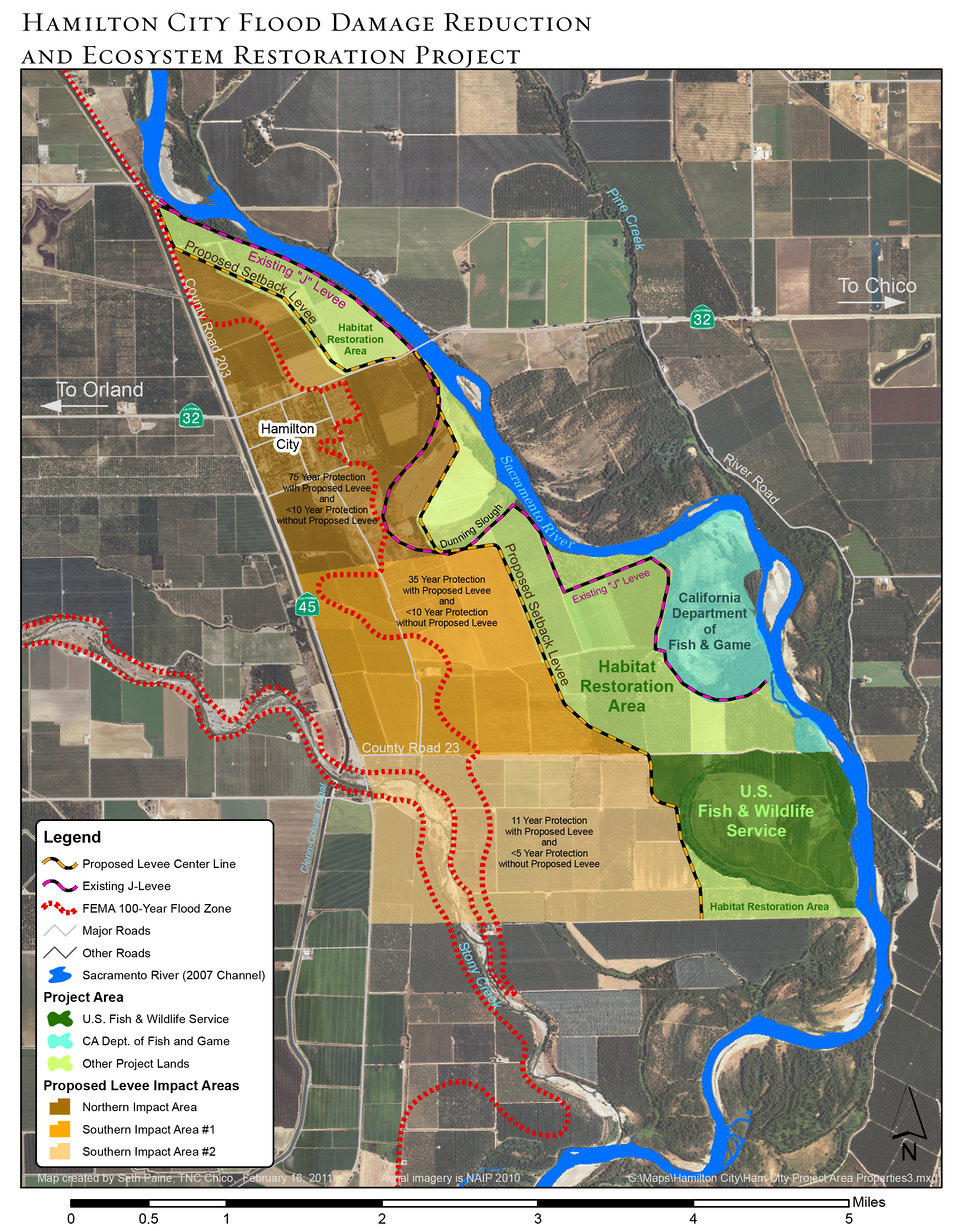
Ham City Project, March 2011

A March 2011 illustration highlights elements of the U.S. Army Corps of Engineers Sacramento District's Hamilton City Flood Damage Reduction and Ecosystem Restoration Project in Hamilton City, Calif. The project will let nature help do the work of reducing flood risk by restoring 1,500 acres of native habitat between the Sacramento River and a new setback levee to be built near the town.